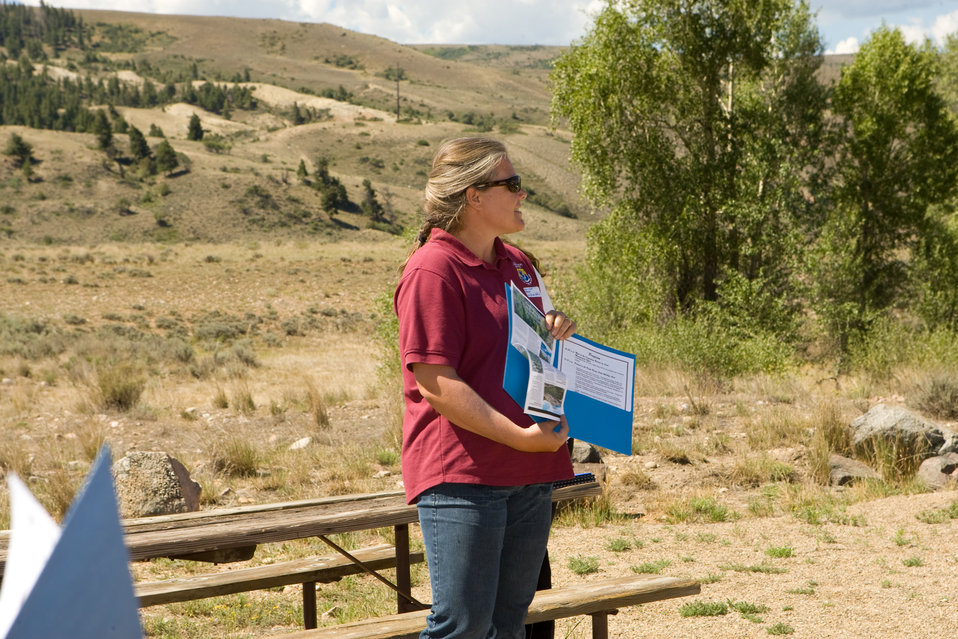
Colorado Rare Plant Conservation Initiative

The Colorado Rare Plant Conservation Initiative (RPCI) is a partnership of 23 statewide and regional agencies, private organizations, and academic institutions working to conserve 121 rare plants in Colorado. As part of these efforts the group developed the Colorado Rare Plant Conservation Strategy, developed Best Management Practices to reduce energy development impacts, addressed climate change, and developed focused strategies for the conservation of individual species at eight priority landscapes. The group has also worked to coordinate volunteer efforts for plant conservation across the state.